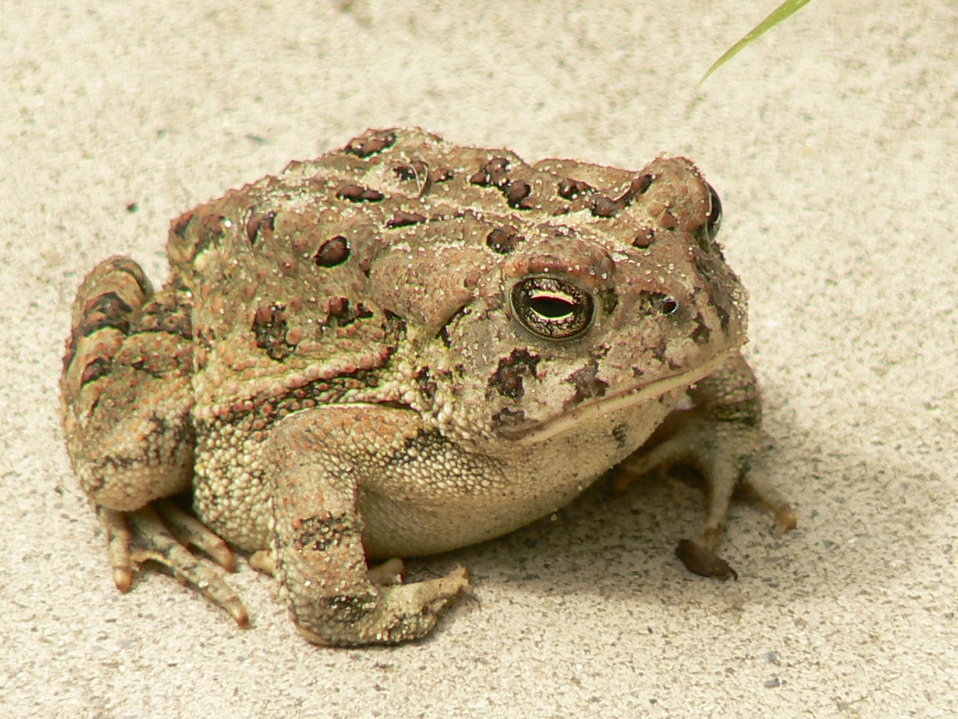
Fowler's toad at Cape May National Wildlife Refuge.